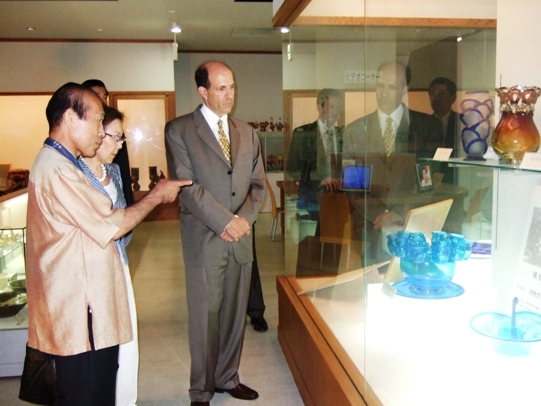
Ambassador Roos Visits Kariyushi Shop in Okinawa

U.S. Ambassador to Japan John V. Roos visits a Kariyushi shop in Okinawa, Japan, on June 19, 2010.